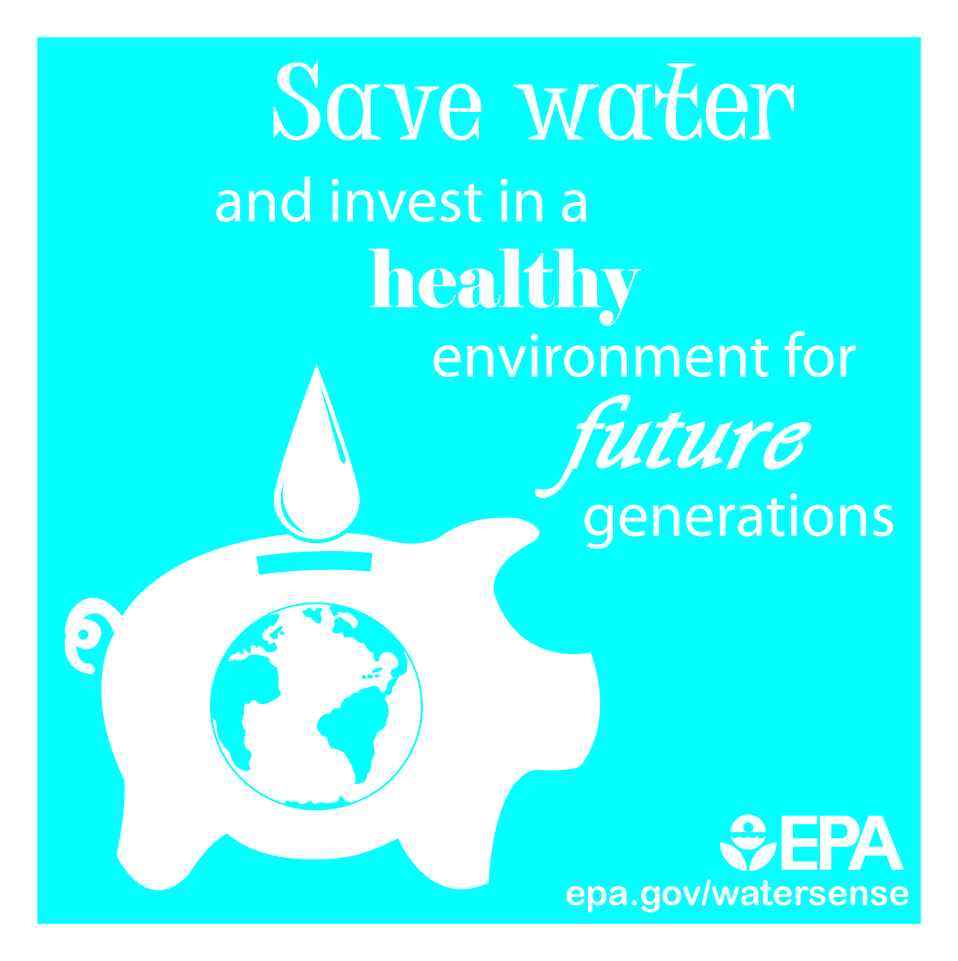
Save Water

Did you know that even though about 70% of the earth's surface is covered by water, less than 1% is available for human use.